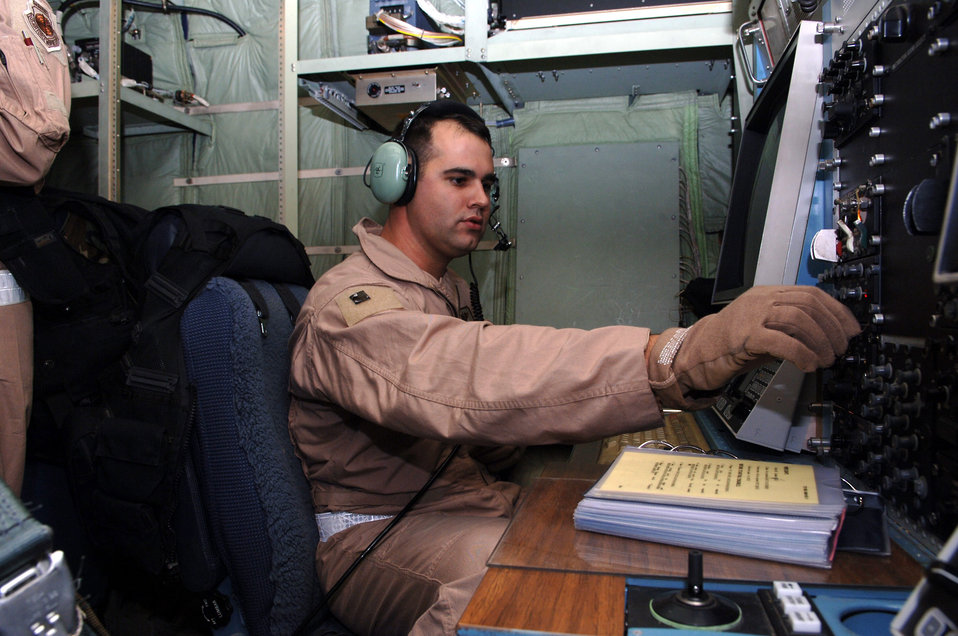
Troops look up to EC-130 support

BAGRAM AIR BASE, Afghanistan (AFPN) -- Tech. Sgt. Mike Dyson makes final checks on an EC-130H Compass Call before a combat sortie. Sergeant Dyson, a 41st Expeditionary Electronic Combat Squadron mission crew supervisor, deployed from Davis-Monthan Air Force Base, Ariz. Since November 2004, EC-130s have supported more that 1,500 air-support requests from ground forces participating in Operation Enduring Freedom.